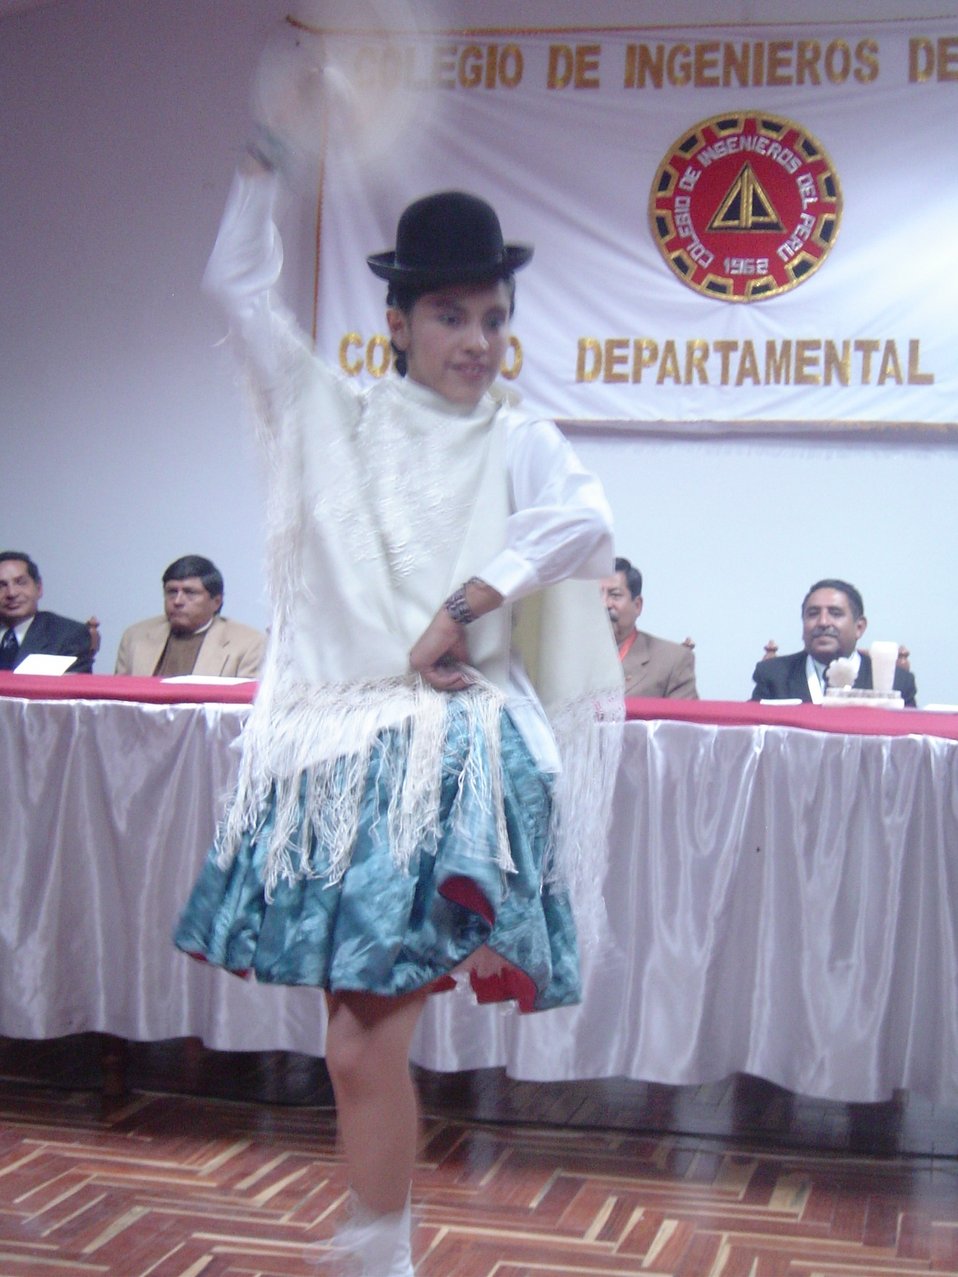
Cholita Puneña